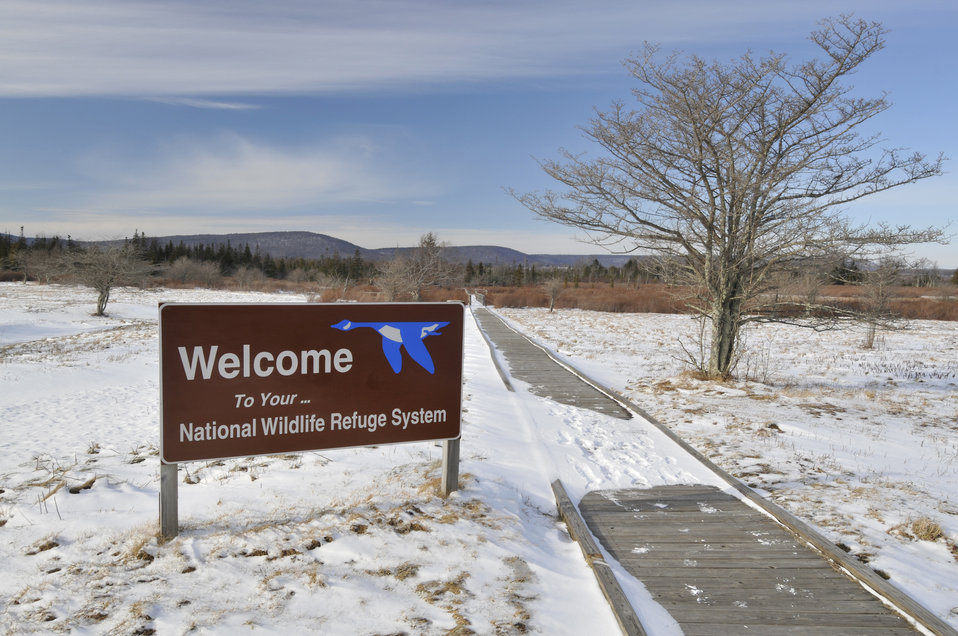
A sign marks the entrance to the Canaan Valley National Wildlife Refuge in Davis, West Virginia on January 28, 2010.